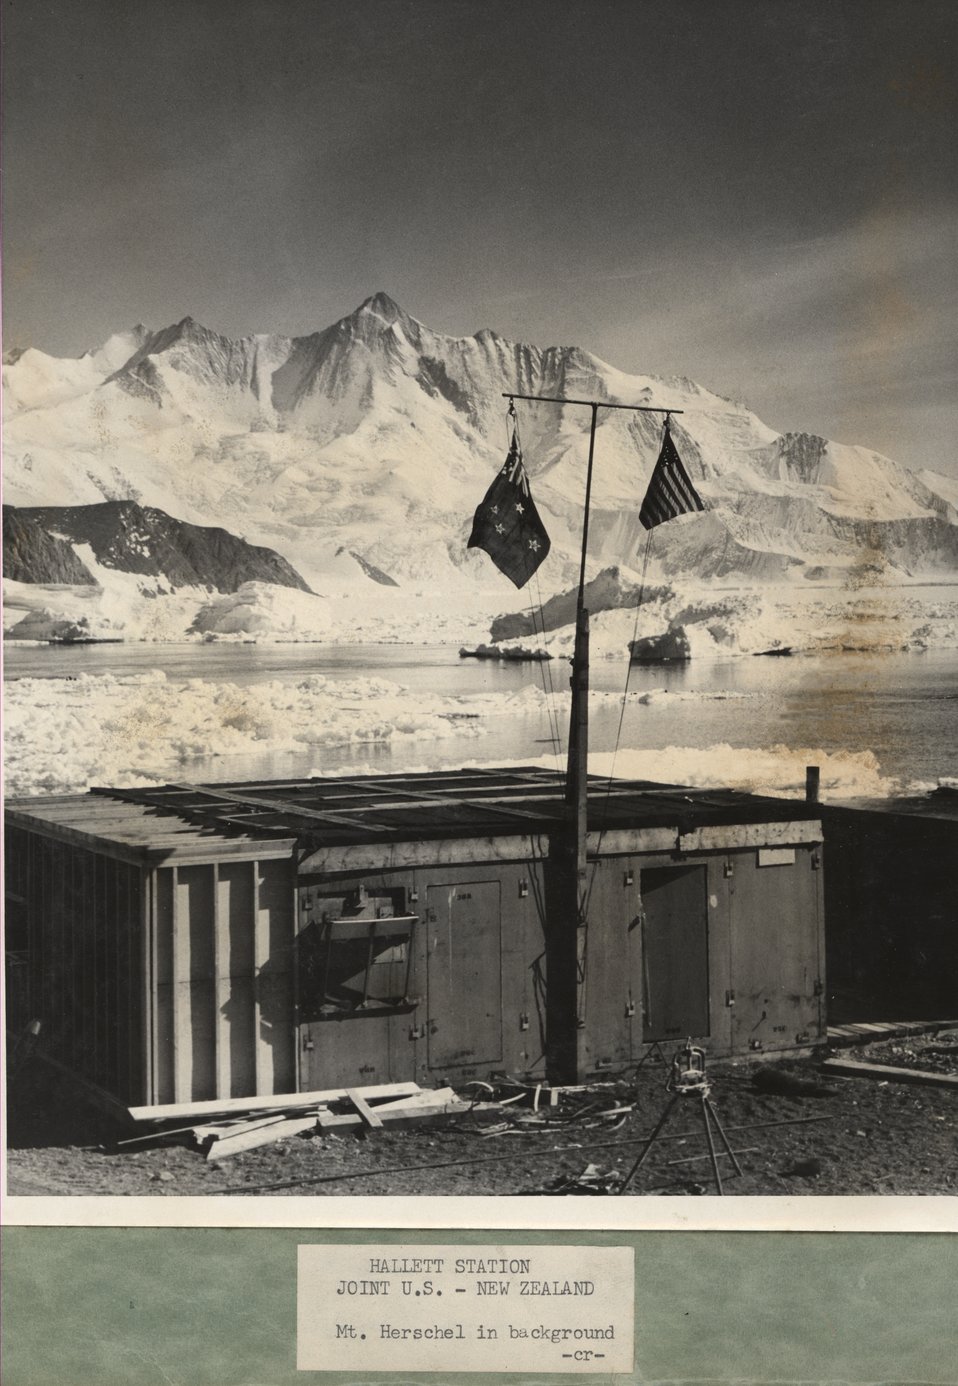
Hallett Station with Mt. Herschel in the background. Sir Edmund Hillary led an expedition to climb Mt. Herschel in the 1967-1968 summer season.